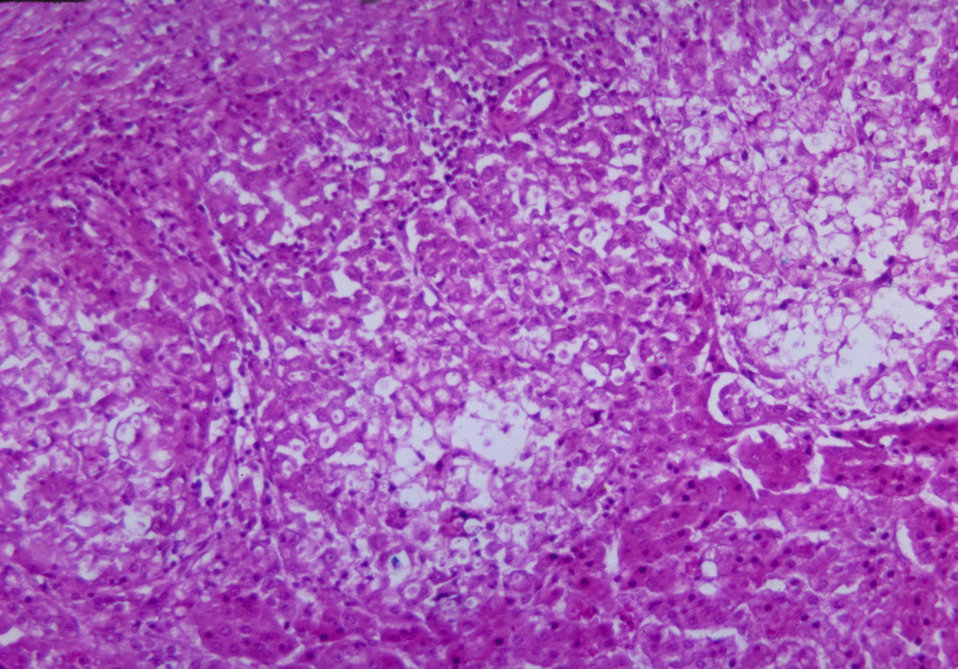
This micrograph depicts histopathologic changes due to cryptococcosis of the adrenal gland.